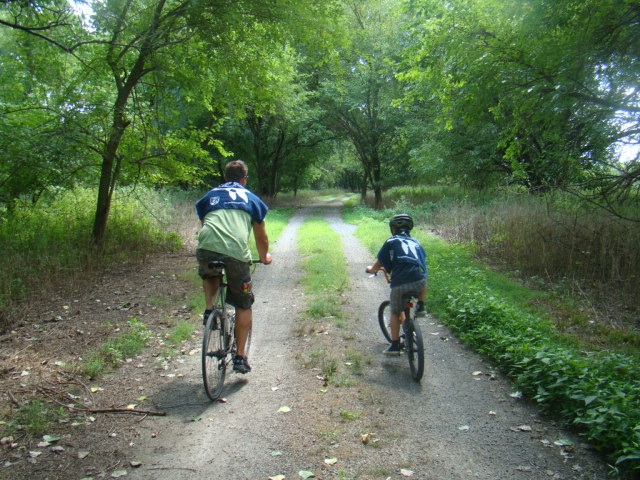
Get Your Goose On!

Father and son go on a bike ride at John Heinz NWR. Getting Their Goose On!